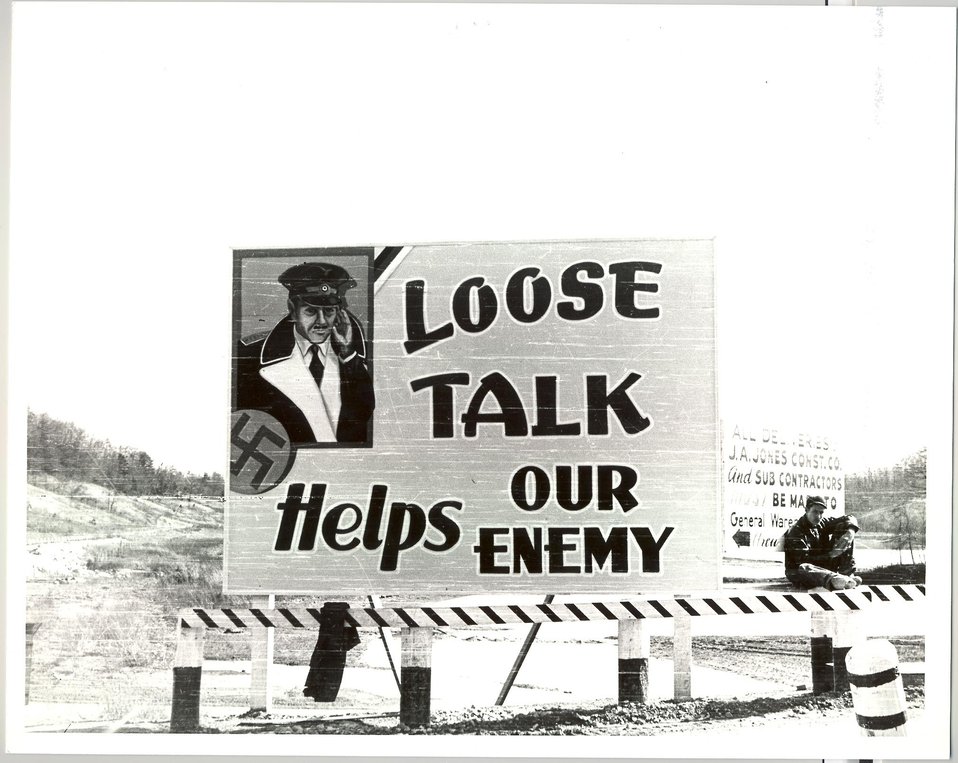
Loose Talk Helps our Enemy